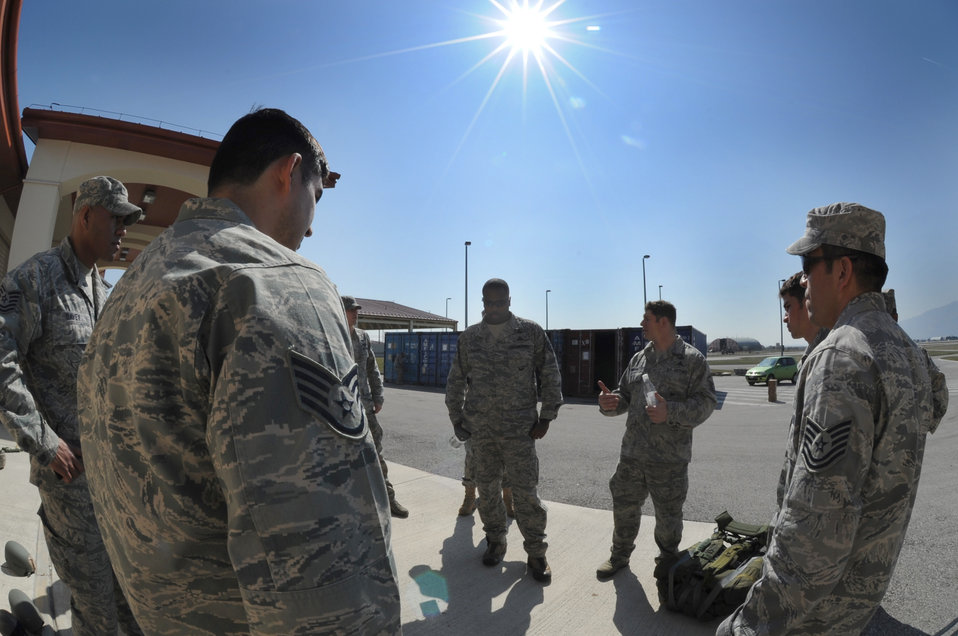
8th Air Support Operations Squadron hosts Jump Week

Members of the U.S. Army 173rd Airborne Brigade Combat Team rest after jumping from a C-17 Globemaster III during a joint coalition training exercise March 23, 2011, at Aviano Air Base, Italy. More than 1,400 personnel from the 173rd ABCT, the 8th Air Support Operation Squadron and Italian army paratroopers participated in the weeklong event.